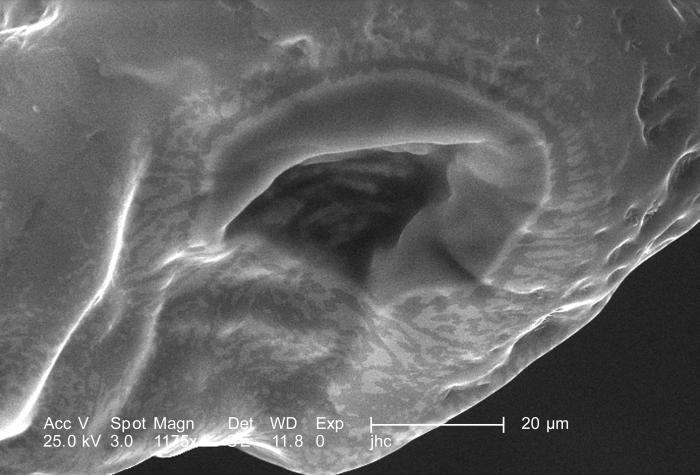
Under a high magnification of 1175X, this scanning electron micrograph (SEM) focused on the distal tip of a female 'velvet ant's', Dasymutilla sp., stinger. In PHIL 9881 and 9882, lower magnifications places this image into a context, which allows you to appreciate its orientation. This is the stinger's tip, which is encased in this bulbous sheath, which may act to protect the delicate sharp tip from being damaged, which would reduce its effectiveness when trying to penetrate its victim. Also see PHIL 4638, 6363, and 6364 for photographs of the ant revealing its coloration, and velvety covering of external chitinous hairs.